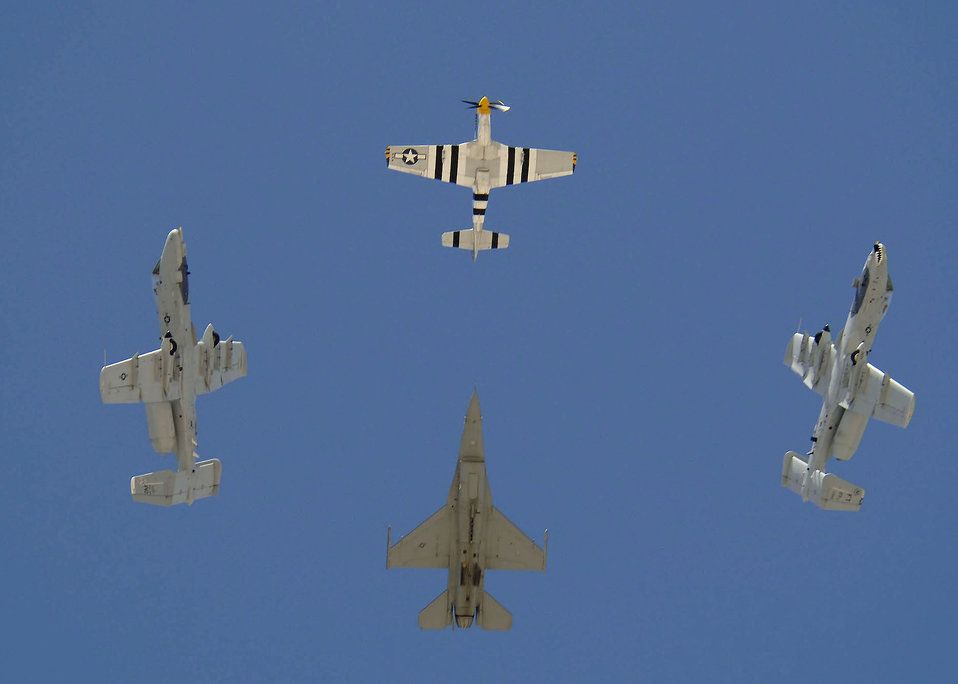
Demonstration team excels at Heritage Conference

Two A-10 Thunderbolt IIs break away from their formation as a P-51 Mustang and an F-16 Fighting Falcon continue on March 3 while demonstrating aerial capabilities during the 2007 Heritage Conference at Davis-Monthan Air Force Base, Ariz. The conference provides an opportunity for Air Combat Command demonstration pilots to train together with modern and historic military aircraft in preparation for the upcoming air-show season.